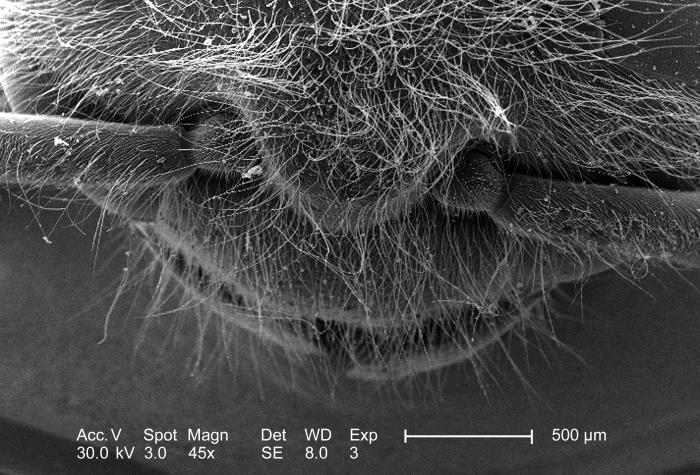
From a relatively low-magnified perspective, this scanning electron micrograph (SEM) depicted a superior view of the head capsule of a Western honeybee's, Apis mellifera, head and thorax. Revealed are the bee's two laterally situated large antennae, and an exoskeletal surface that is covered by setae, or 'hairs' of various lengths. Also somewhat visible, are the bee's mandibular mouth parts; Magnified 45x.